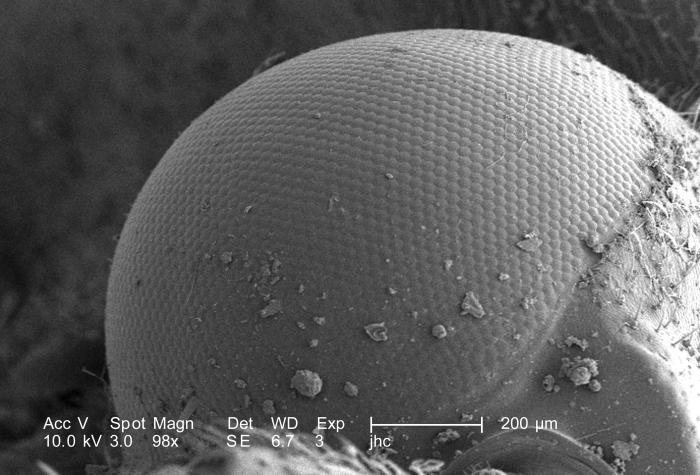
At a relatively low magnification of 98X, this scanning electron micrograph (SEM) depicted some of the details of the morphologic configuration of one of the two compound eyes used by an unidentified bug that had been found deceased in the suburbs of Decatur, Georgia. The scattered particulate matter adorning the insect's exoskeletal surface was merely environmental debris common to its habitat. See PHIL 9984 for another, more highly magnified view of the insect's compound eye.